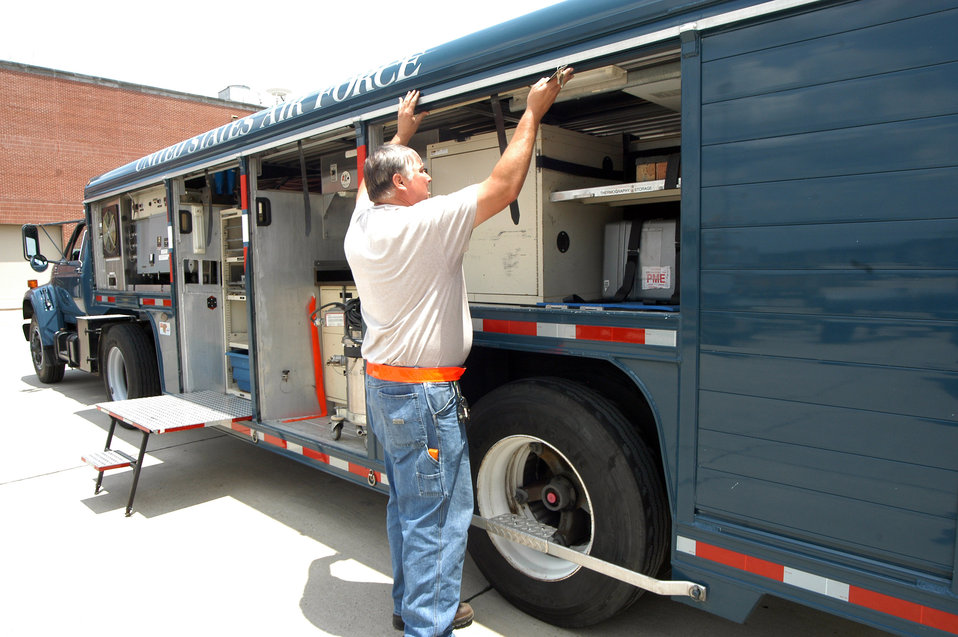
Robins War Wagons bring maintenance to warfighters

Allan Widener opens the panels of the War Wagon to reveal the equipment and supplies it holds in May at Robins Air Force Base, Ga. The 37-foot long, tractor-trailer based at the 402nd Commodities Maintenance Group deploys around the world with a traveling repairman in support of the warfighter anywhere at a moment's notice. Mr. Widener is a driver and mechanic from Robins AFB.